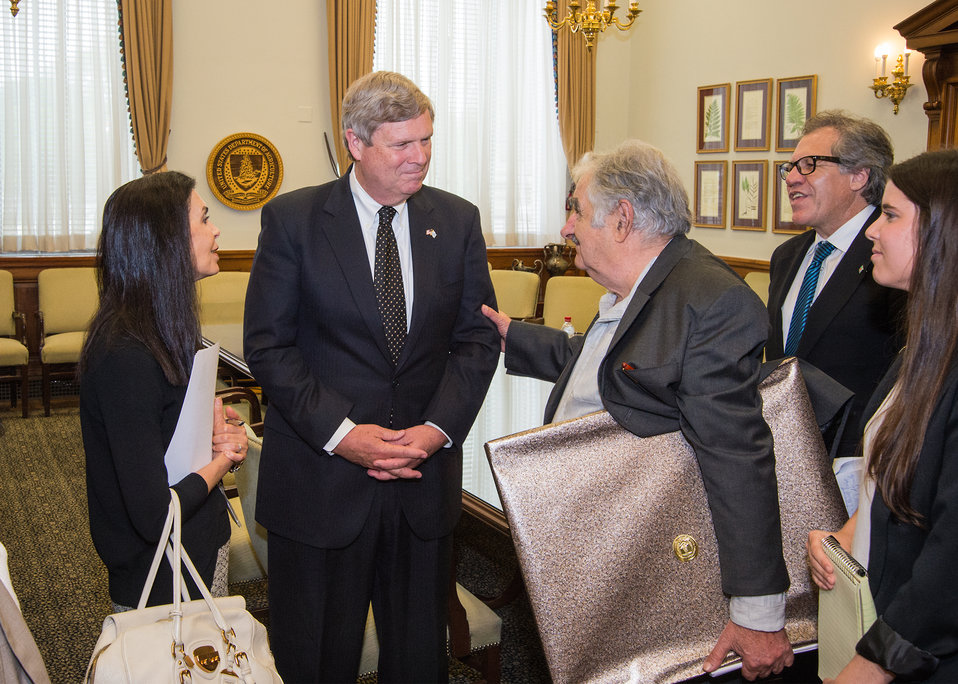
Agriculture Secretary Tom Vilsack presents a gift to Uruguay President Jose Mujica after their discussion on cooperation in agricultural research, production and climate changes on agriculture at the U.S. Department of Agriculture (USDA) in Washington, D.C. on Wednesday, May 14, 2014.